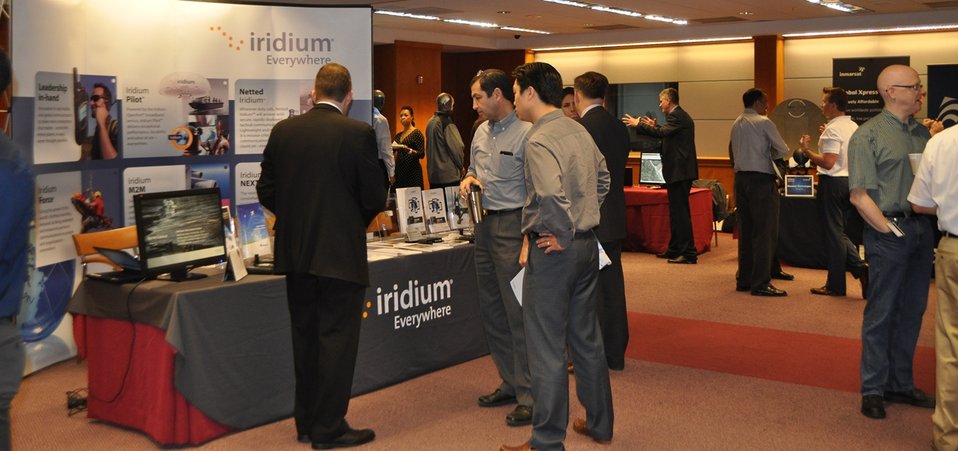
5.14.2014 Satellite Technology Demonstration

Satellite Technology Demonstration at FCC